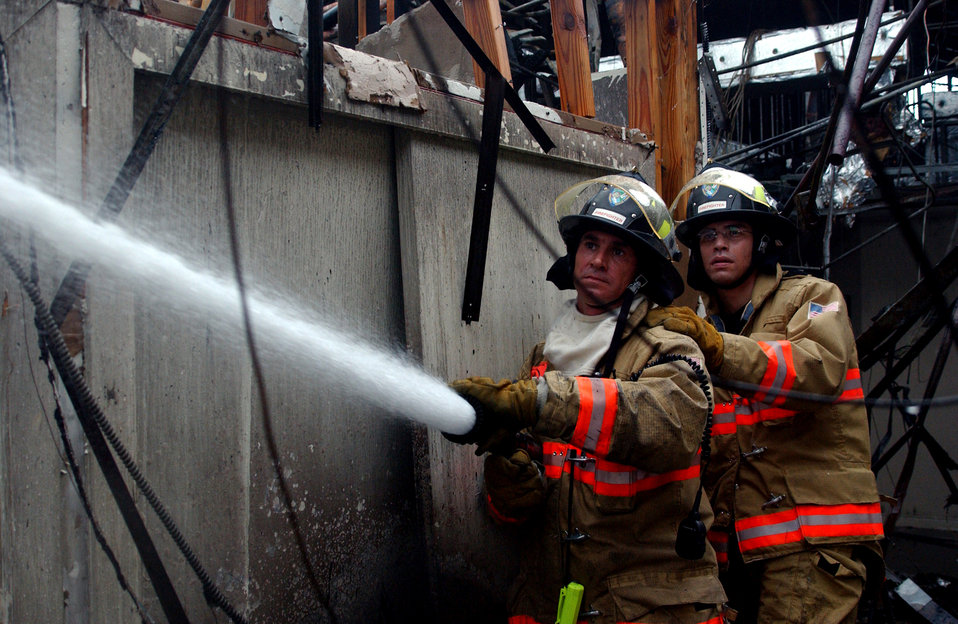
Fire destroys Patrick officers club

PATRICK AIR FORCE BASE, Fla. -- Base firefighters Harry Alonzo (left) and Staff Sgt. Frank Gutierrez fight a mid-morning blaze that reignited at the officers club Feb. 1. The fire destroyed the 54-year-old building. Although concern for the main fire had passed by daybreak, the firefighters continued to battle small flare-ups caused by the smoldering rubble and coastal breeze.